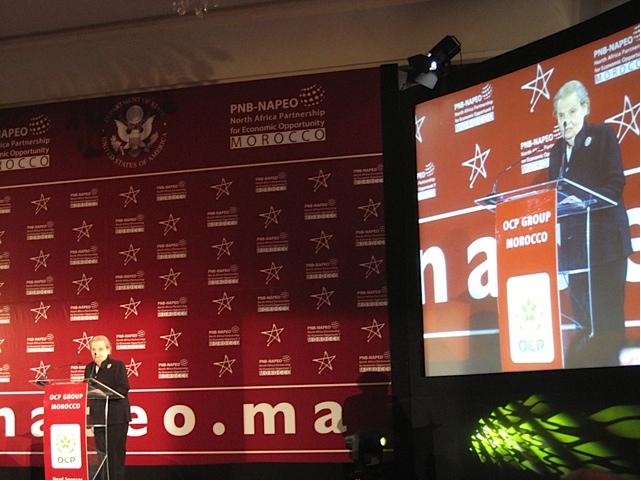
Former Secretary Albright Welcomes Participants

Former U.S. Secretary of State Madeleine Albright, Chair of the Partners for a New Beginning (PNB) International Advisory Board, welcomes participants to the second U.S. – Maghreb Entrepreneurship Conference in Morocco, January 16-18, 2012.